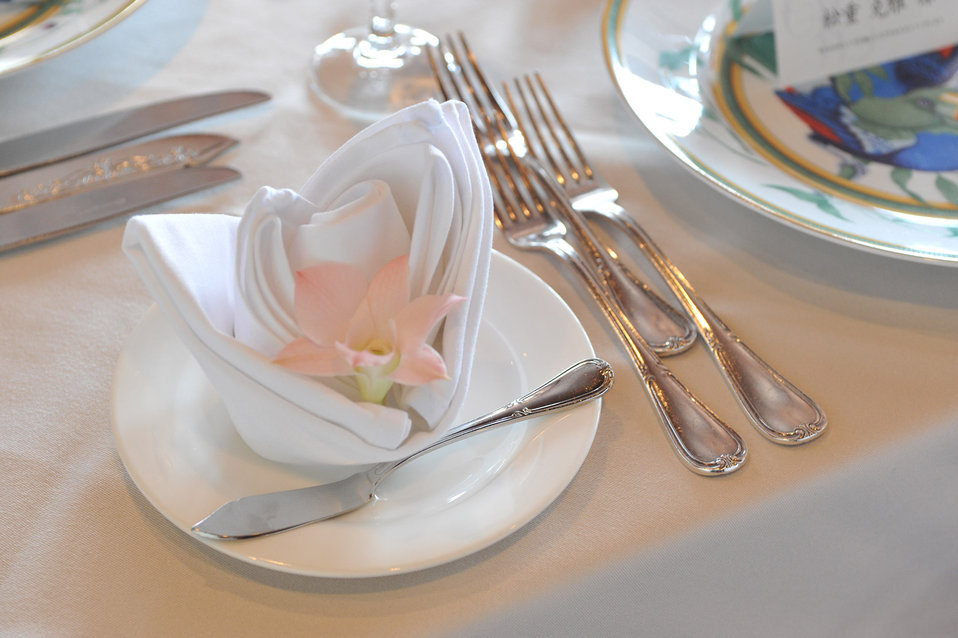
Table of the wedding 3.